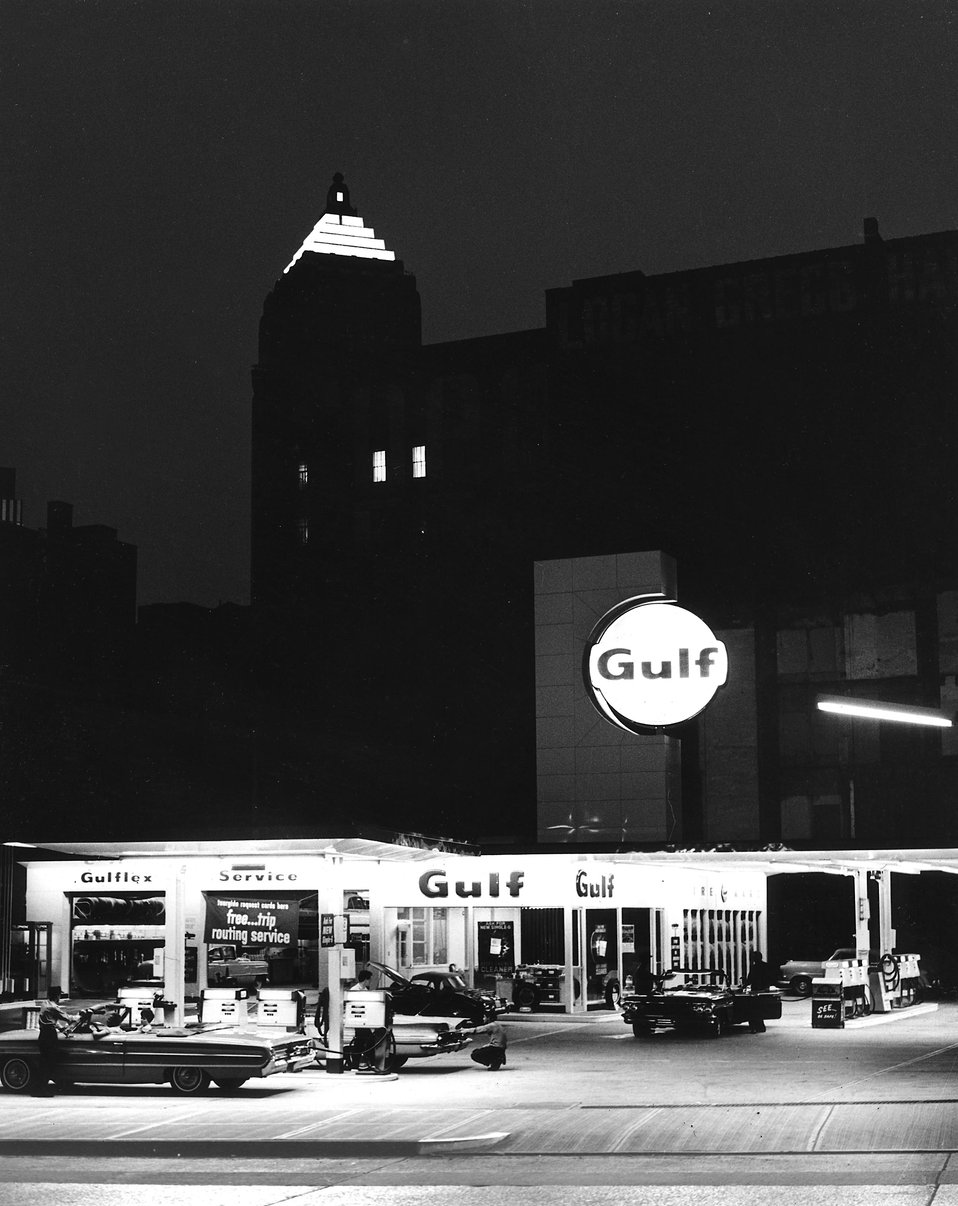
Service center at night. c. 1960s